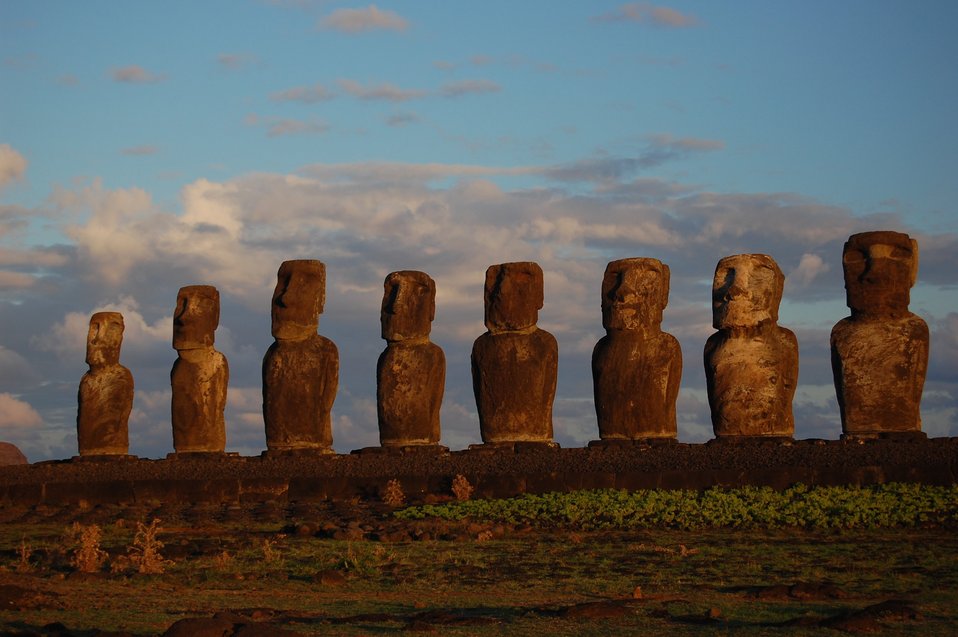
Moai facing inland at Ahu Tongariki, restored by Chilean archaeologist Claudio Cristino in the 1990s.